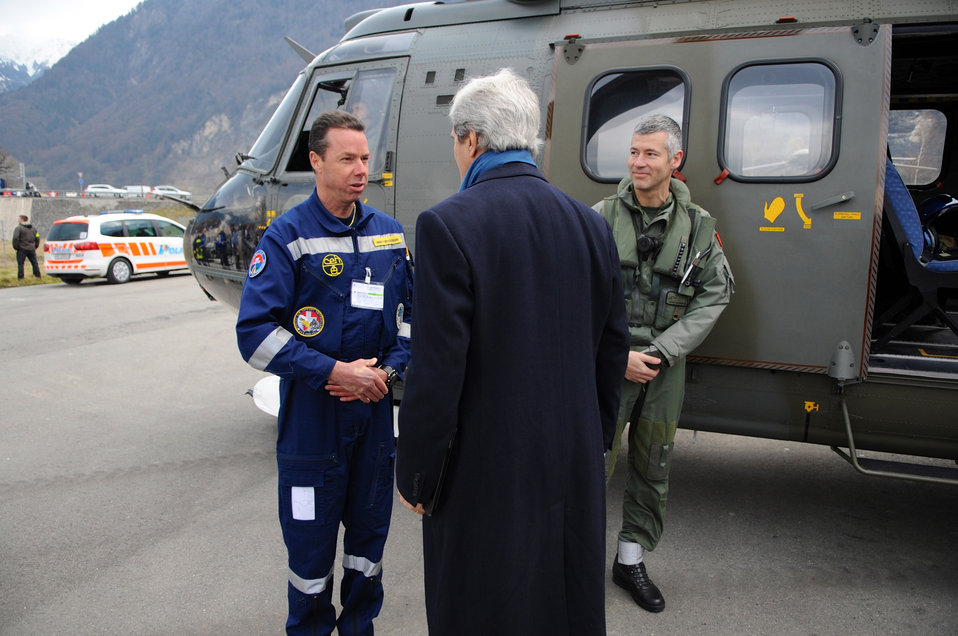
Secretary Kerry is Greeted by Members of Swiss Flight Crew

U.S. Secretary of State John Kerry is greeted by members of the Swiss flight crew that flew him between Montreux and Davos, Switzerland, on January 23, 2014.